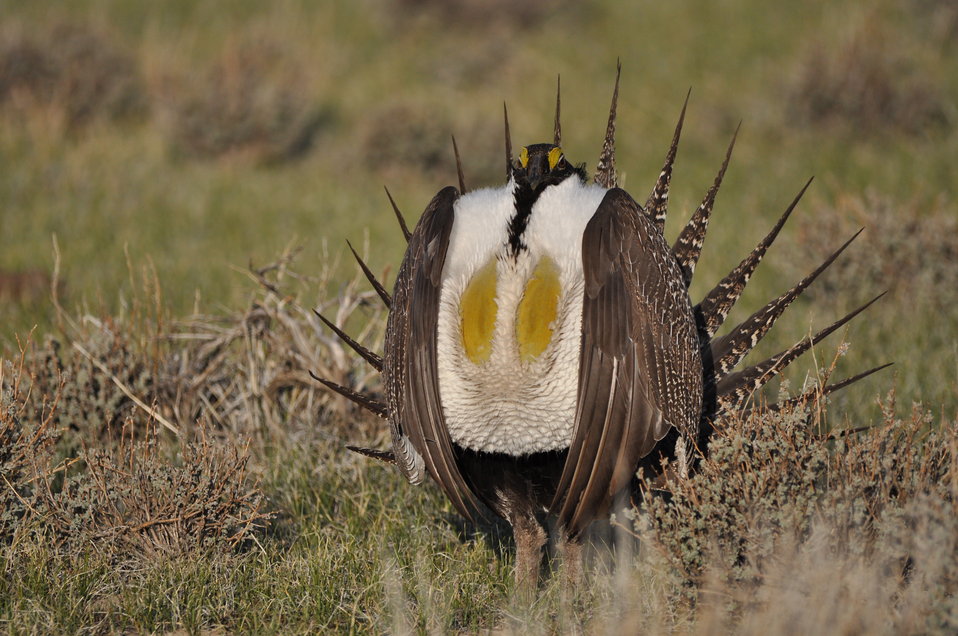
Greater Sage-Grouse

Photo Credit: Jeannie Stafford/USFWS
A greater sage-grouse male struts at a lek (dancing or mating ground) near Bridgeport, CA to attract a mate.